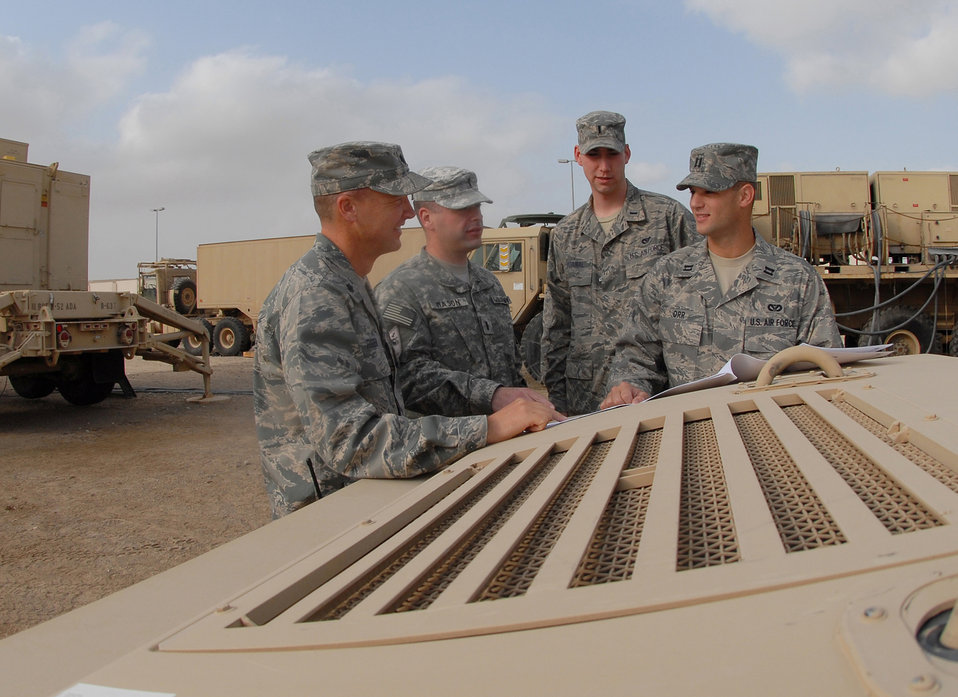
Airmen prep for Patriot's debut at Southwest Asian base

Lt. Col. Fred Thaden (left to right), Army 1st Lt. Erik Mason, 1st Lt. Shawn McDanal and Capt. Raymond Orr gather at the Patriot Battery motor pool to go over ground plans in preparation for the arrival of about 200 Soldiers in the coming weeks Jan. 3 at an air base in Southwest Asia. The advance team of Soldiers, in addition to the arrival of the main body, will comprise the first Patriot Battery at the 380th Air Expeditionary Wing. Colonel Thaden is the 380th Expeditionary Mission Support Group deputy commander. Lieutenant Mason is a 5-52 Air Defense Artillery Battalion Signal Officer. Lieutenant McDanal and Captain Orr are both project officers with the 380th Expeditionary Civil Engineer Squadron.